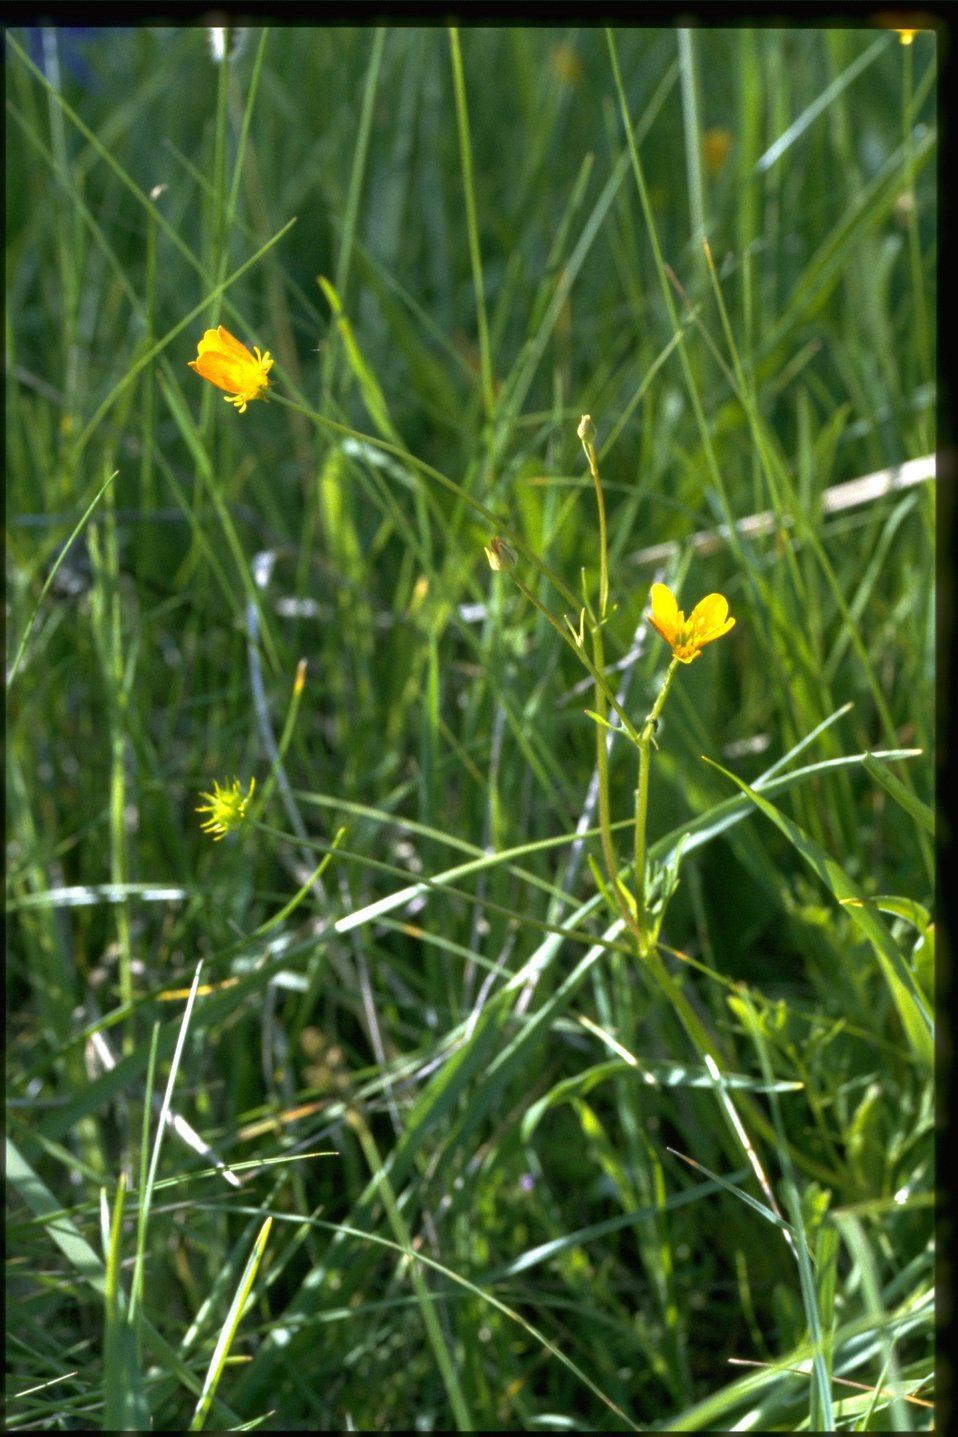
Farshot of Ranunculus.